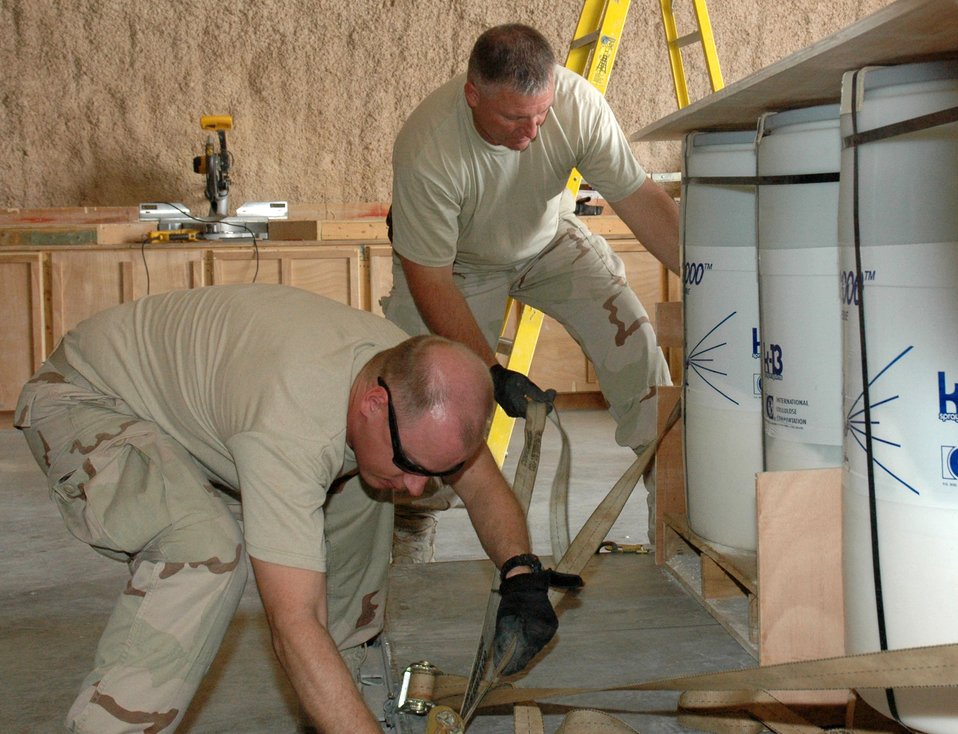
RED HORSE logistics hub supports Airmen uprange

Airmen from the 1st Expeditionary RED HORSE Group palletize supplies to transport to Airmen in forward-deployed RED HORSE units throughout the area of responsibility Feb. 19 in Southwest Asia.